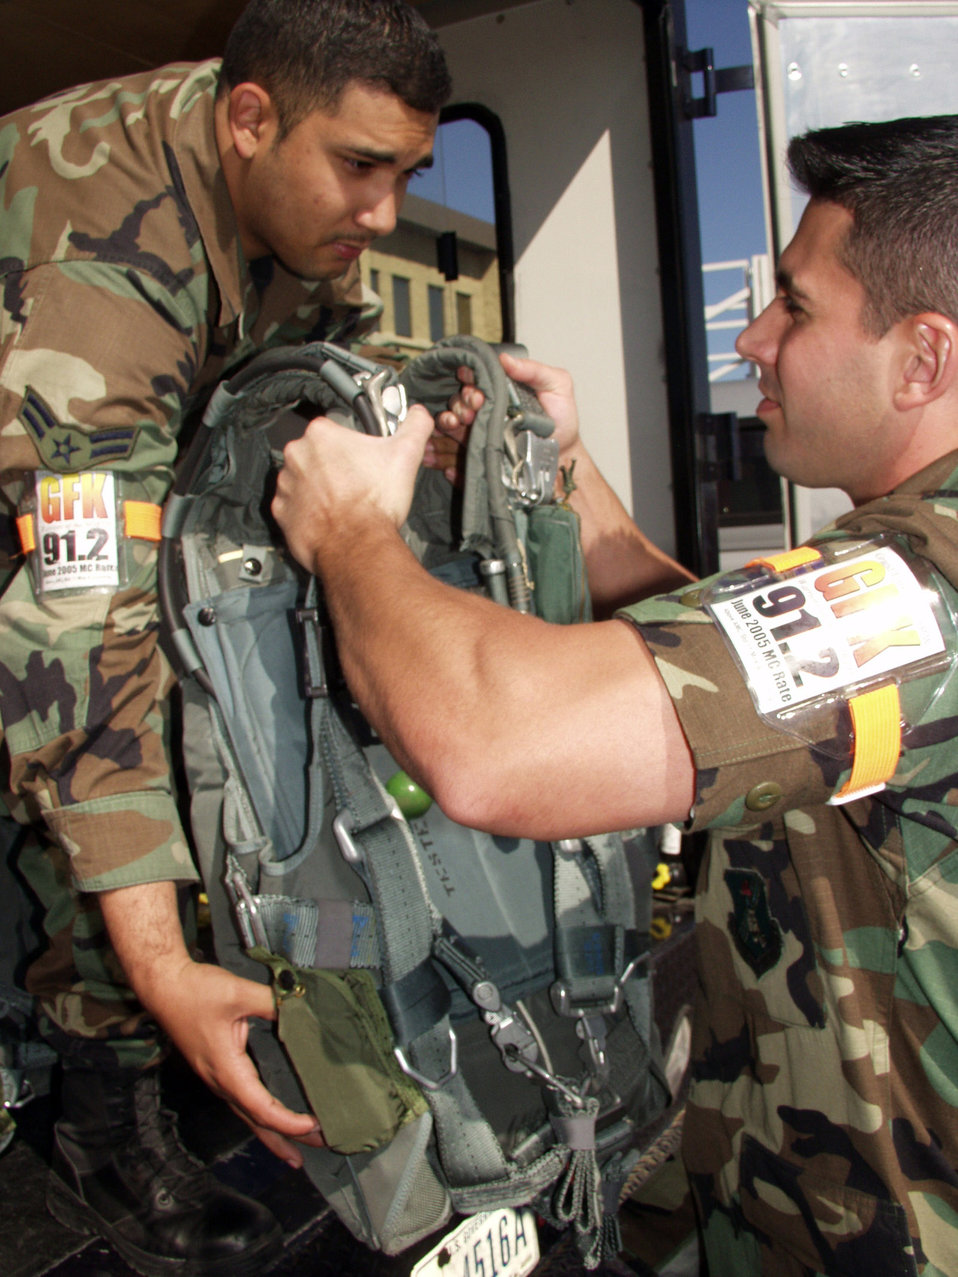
Keeping the mission going at home, away

FAIRCHILD AIR FORCE BASE, Wash. -- Airmen 1st Class Gabriel Muniz-Cruz (left) and Matthew Brilla load a parachute while deployed here. Airmen from Grand Forks Air Force Base, N.D., are here while their base's runway is closed for repairs. They are assigned to the 912th Air Refueling Squadron.